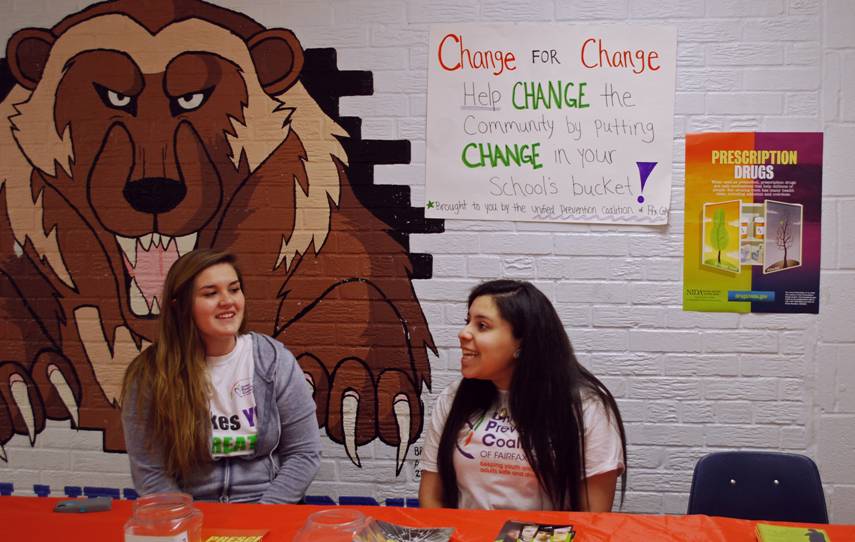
Youth Council of the Unified Prevention Coalition of Fairfax County